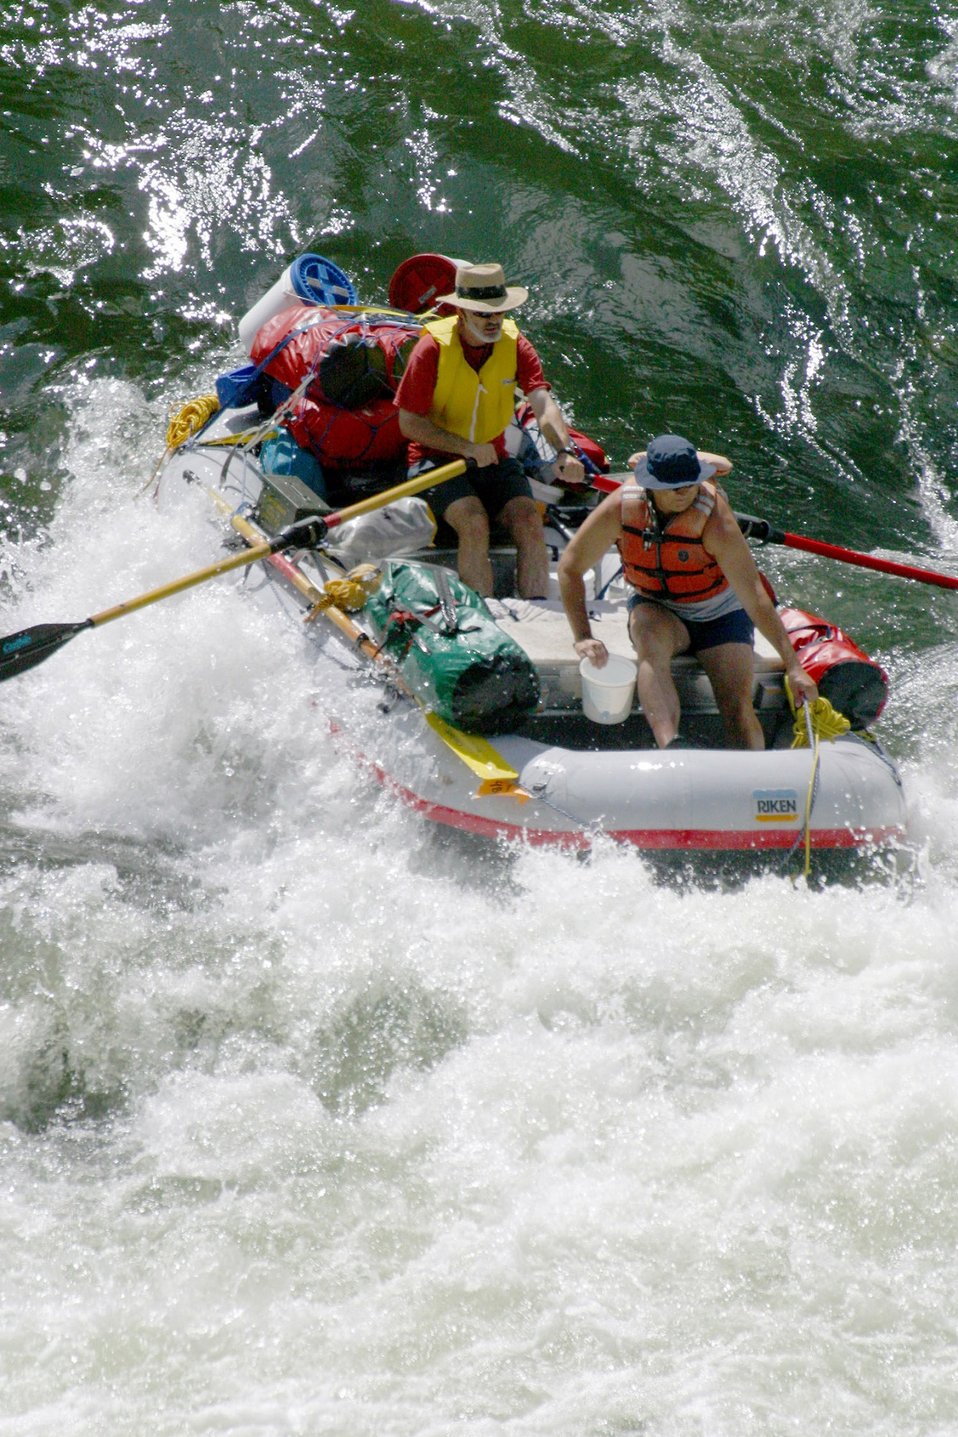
Boater at Grave Creek Falls